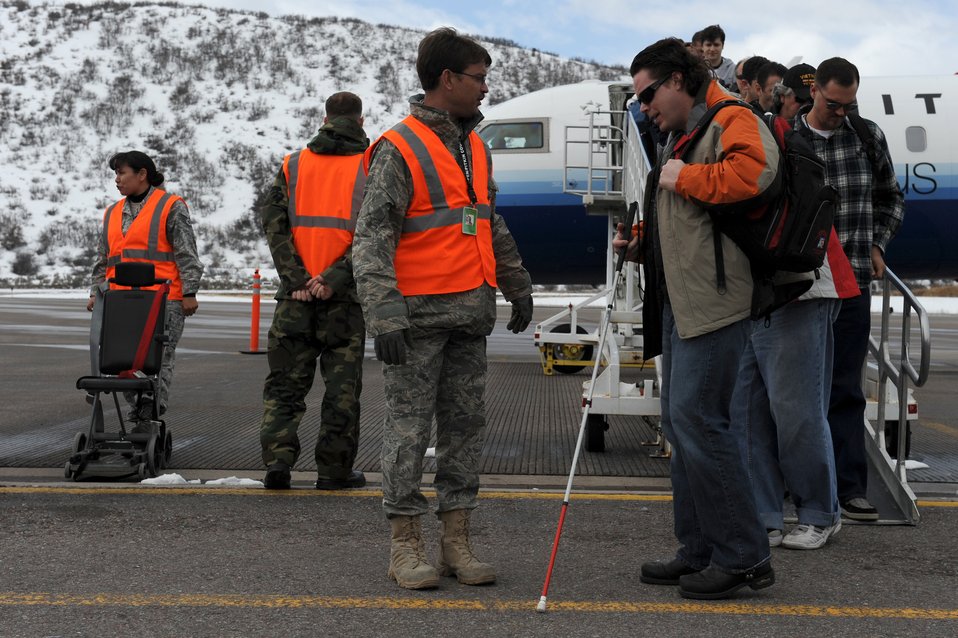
Winter Sports Clinic

Tech. Sgt. Richard Layton escorts an arriving veteran March 27, 2010, at the airport in Aspen, Colo. Veterans were arriving from all over the world for the 24th National Disabled American Veterans Winter Sports Clinic in Snowmass Village, Colo. Volunteers from Luke Air Force Base, Ariz., were there to assist veterans arriving for the games. The event is sponsored by the Department of Veterans Affairs and Disabled American Veterans.